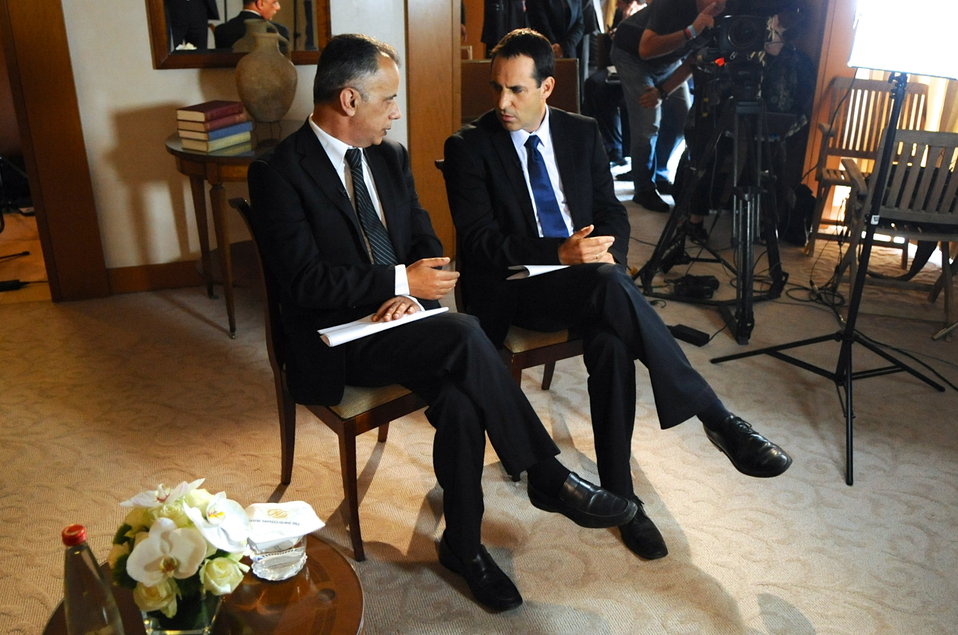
A Palestinian and an Israeli Journalist Chat Before Interviewing Secretary Kerry

Maher Shalabi of the Palestinian Broadcasting Corp. and Udi Segal of Israel Channel 2 chat before a joint interview with U.S. Secretary of State John Kerry focused on Middle East peace talks in Jerusalem on November 7, 2013.